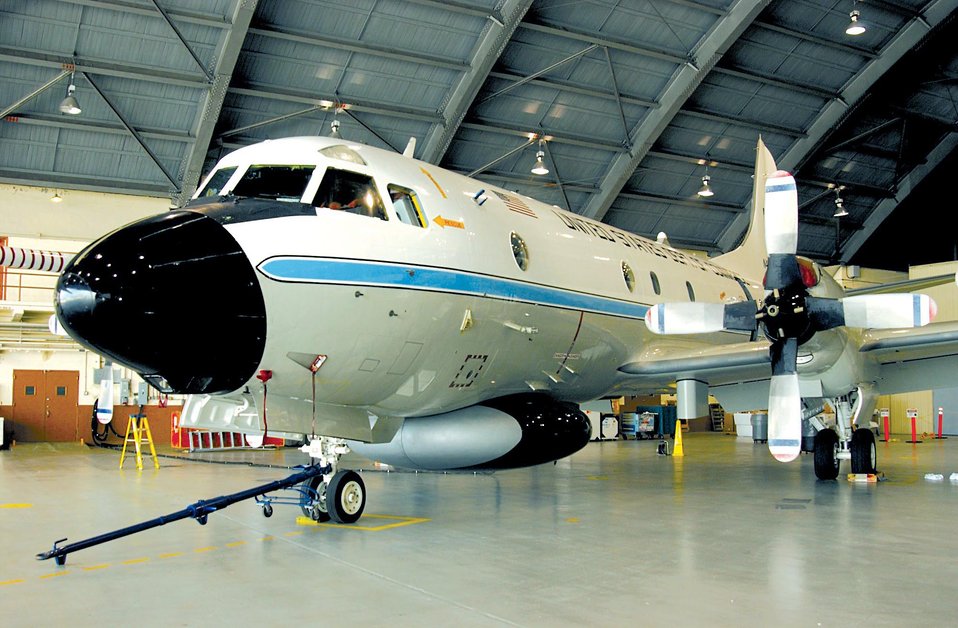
Miss Piggy

MACDILL AIR FORCE BASE, Fla. -- The National Oceanic Atmospheric Administration's WP-3D aircraft, known affectionately as